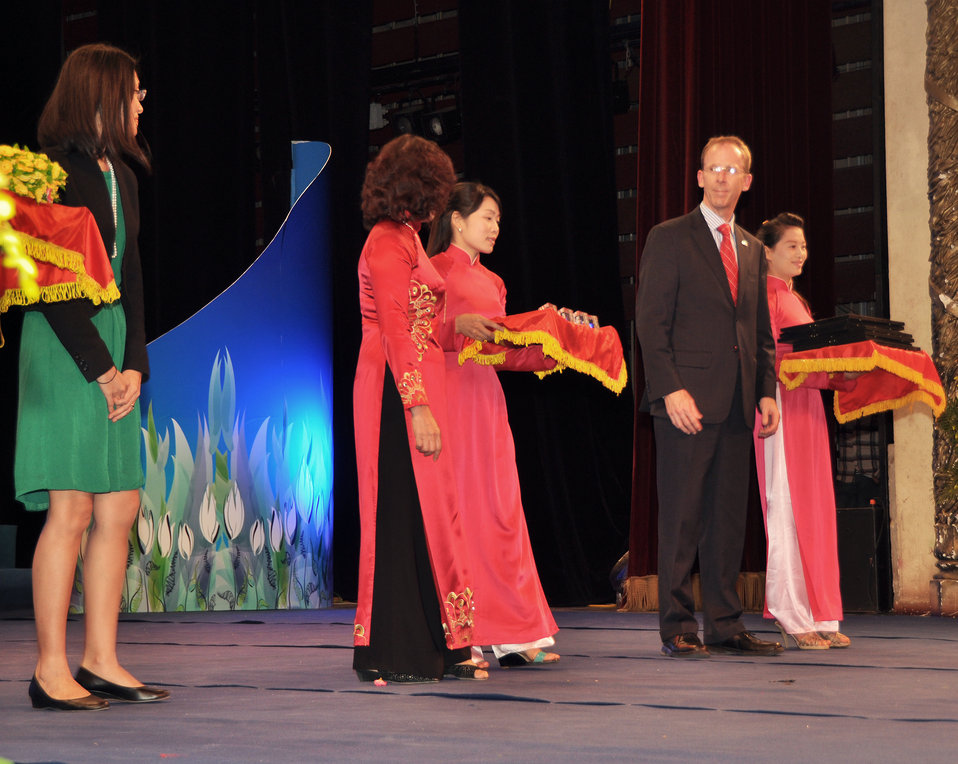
Vietnam Women Innovation Day 2013

USAID Mission Director Joakim Parker awards prizes to winning innovative proposals.

Hanoi, October 2, 2013.